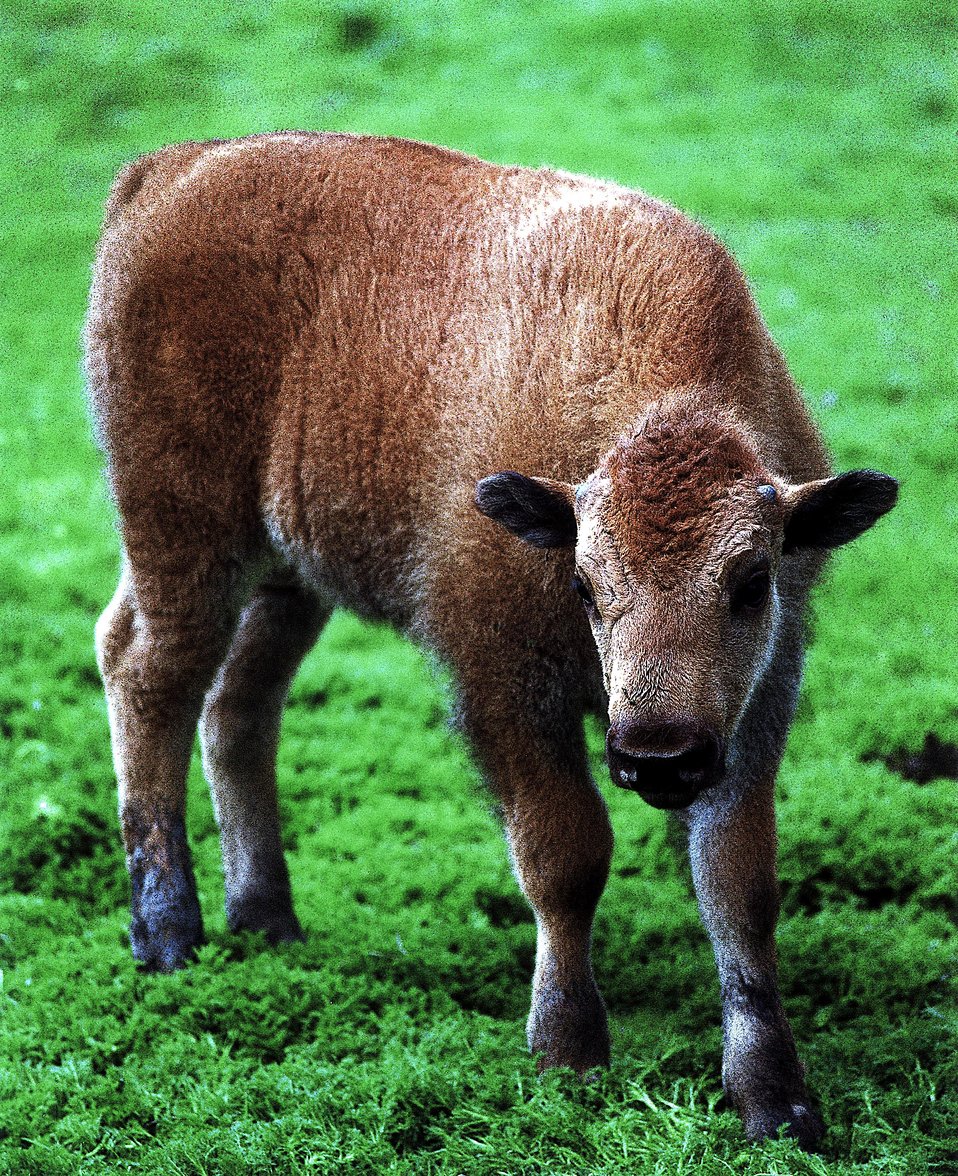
A BISON CALF AT THE FERMI NATIONAL ACCELERATOR LABORATORY SITE.

THE FIRST AMERICAN BISON, A BULL AND FOUR COWS, WERE BROUGHT IN 1969 TO FERMILAB BY THE LABORATORY'S FIRST DIRECTOR, ROBERT WILSON. HE DID THIS IN AN EFFORT TO RECOGNIZE FERMILAB'S PRAIRIE HERITAGE. IN 1971, THE ILLINOIS DEPARTMENT OF CONSERVATION ADDED 21 MORE BISON. THE CURRENT HERD FOUND ON THE LABORATORY SITE ARE DESCENDANTS OF THOSE FIRST ANIMALS.